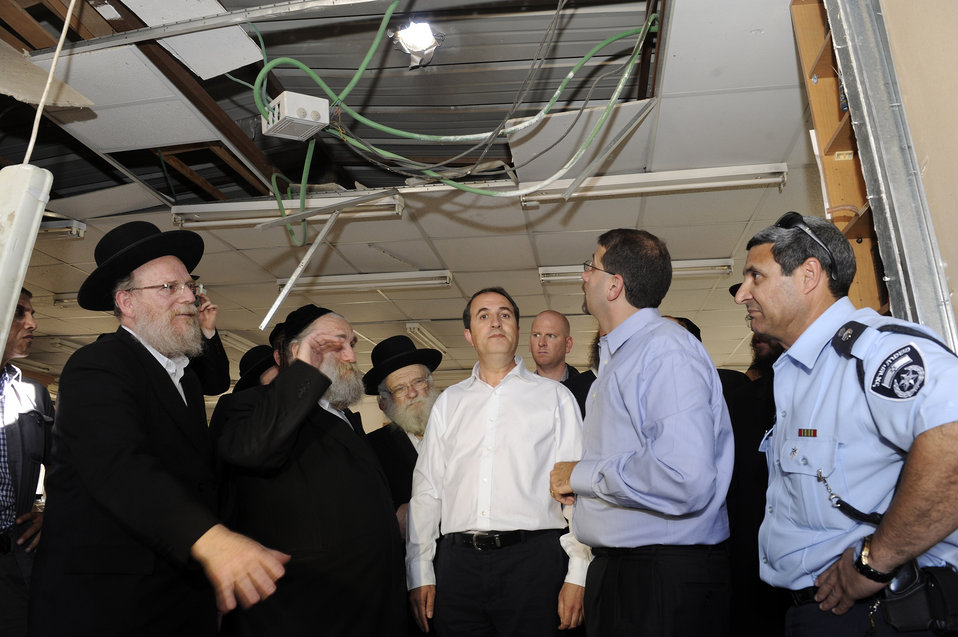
Ambassador Shapiro Tours Ashdod's Operations Center

U.S. Ambassador to Israel Dan Shapiro, with Mayor Dr. Yechiel Lasri, tours the municipality’s operations center and the Jewish seminary where two Grad missiles, fired from the Gaza Strip, exploded and wounded several people, in Ashdod, Israel, on August 23, 2011. State Department photo/ Public Domain]